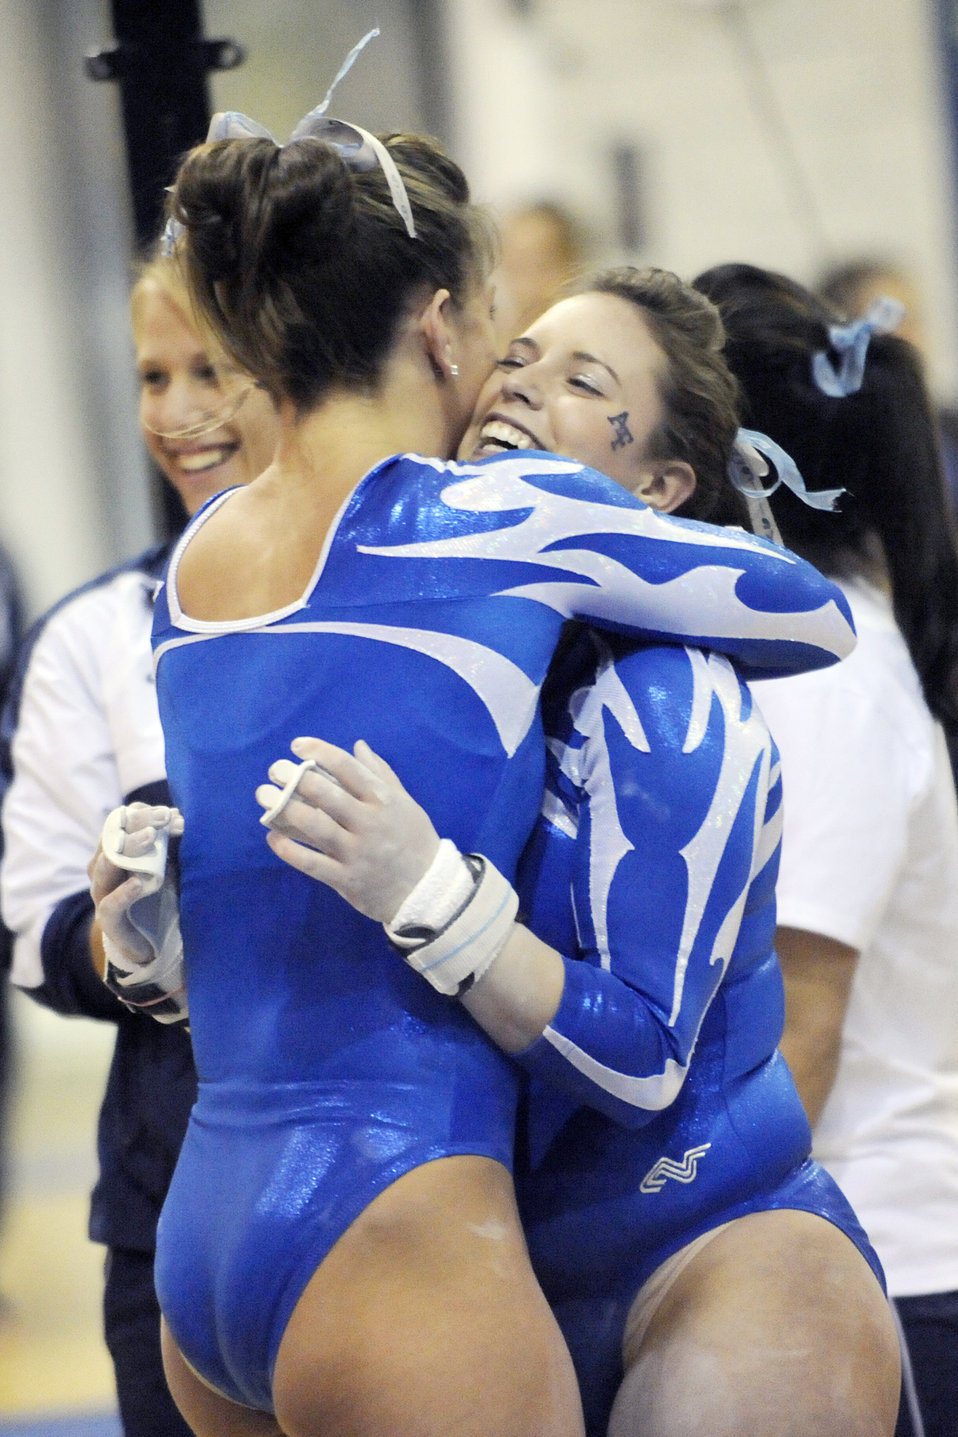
Falcon gymnasts compete against UC Davis

Senior Michelle Denise (left) is embraced by teammate Holland Davis after competing on the uneven bars during Air Force's meet against University of California Davis Jan. 30, 2010, in the Academy's Cadet Gymnasium in Colorado. Air Force lost the meet 191.575 to 185.300 despite two event titles.